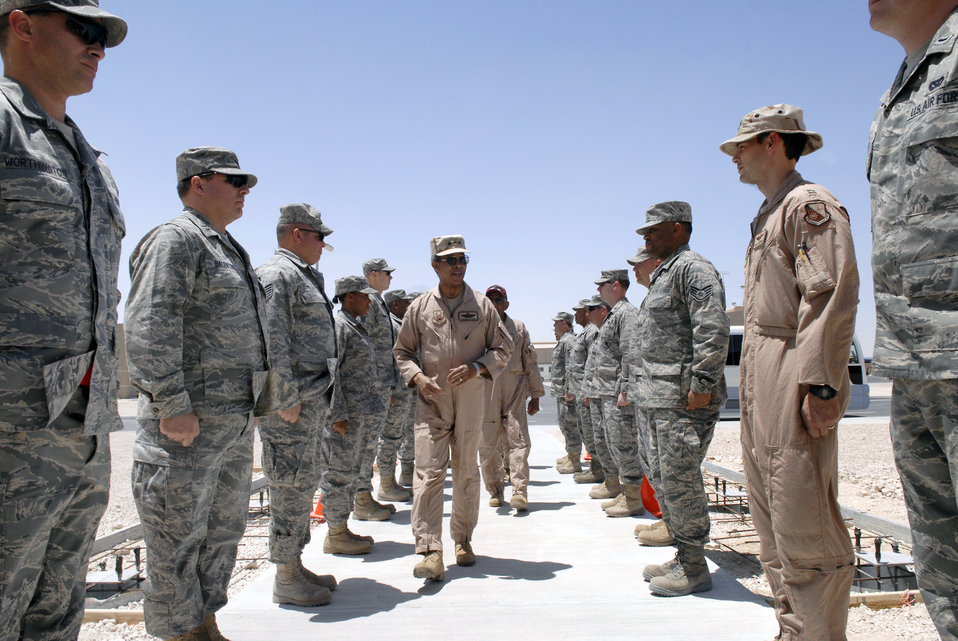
Tuskegee Airmen visit Southwest Asia

Retired Lt. Gen. Russell Davis leads the way for the four Tuskegee Airmen visiting the 379th Air Expeditionary Wing Operations Center April 22 at an air base in Southwest Asia. The Tuskegee Airmen toured operations and spoke with numerous people here supporting operations Iraqi and Enduring Freedom and Combined Joint Task Force - Horn of Africa. General Davis is the president of the nonprofit Tuskegee Airman, Inc.